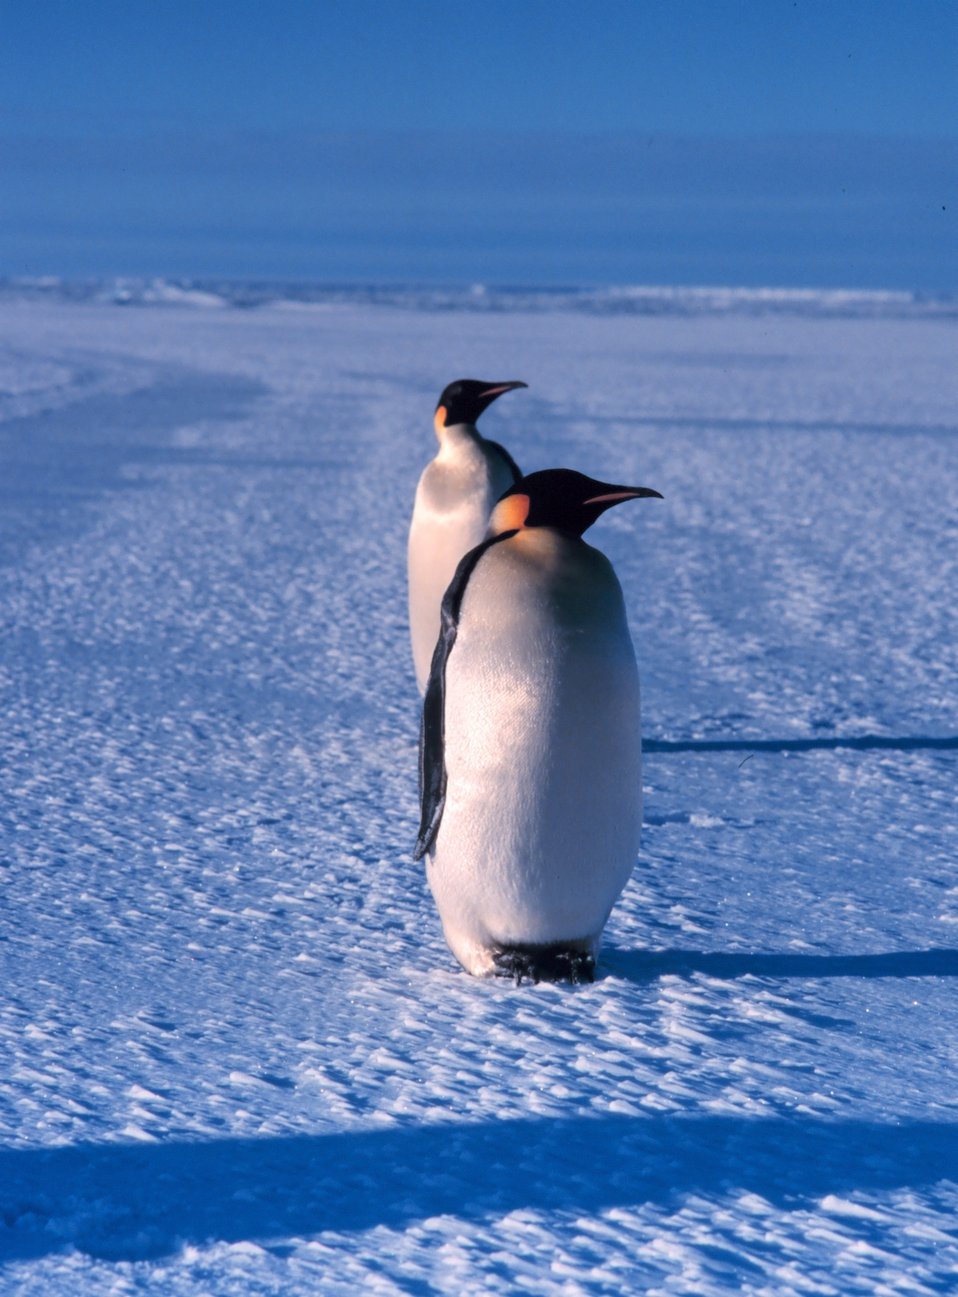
Emperor penguins.